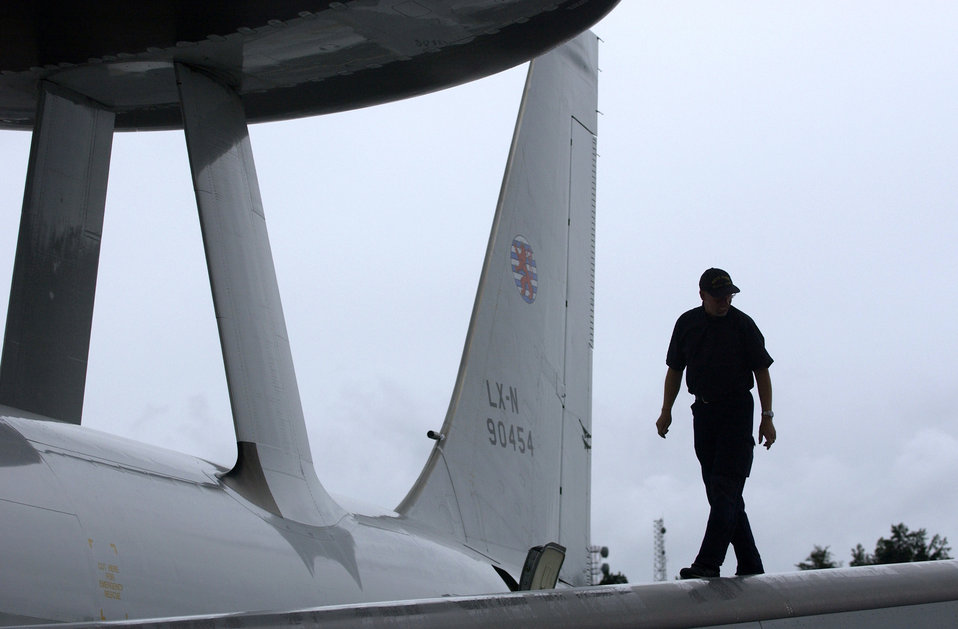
Exercise strengthens U.S., international combat skills

A NATO crew chief inspects the NATO Airborne Warning and Control System after a mission in support of Cooperative Cope Thunder at Elmendorf Air Force Base, Alaska, on July 25.